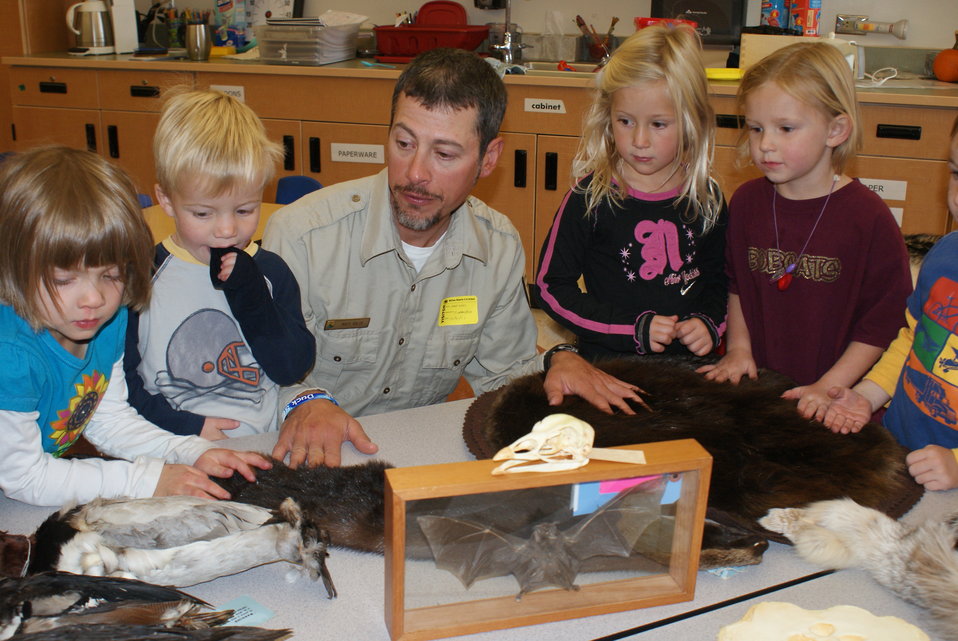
Scientists in the Community Program

U.S. Fish and Wildlife Service Mountain-Prairie Region Deputy ARD for External Affairs, Matt Kales, introduces early childhood education students at William Roberts Elementary School in Denver to some of Colorado's native and historic wildlife species.